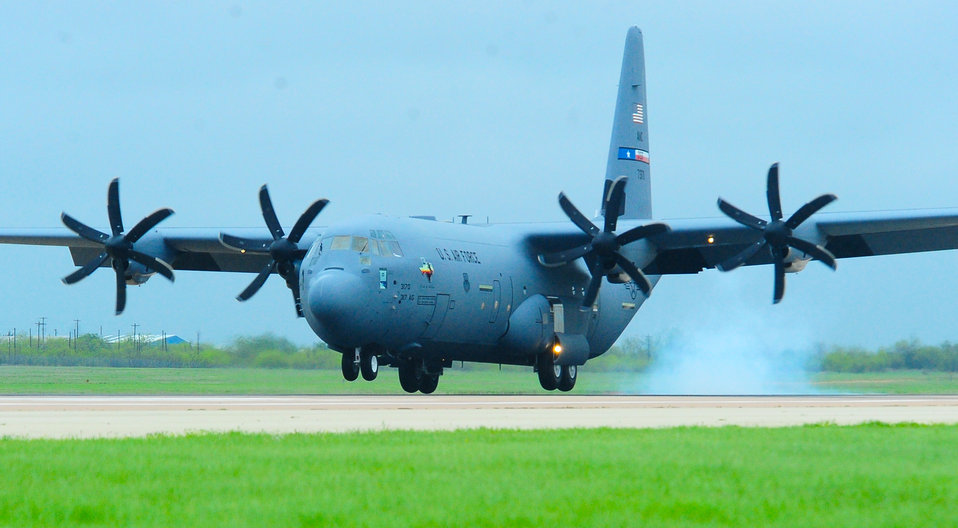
Super Herc

A C-130J Super Hercules touches down at Dyess Air Force Base, Texas, April 16, 2010. The new Super Herc is being delivered by Air Force Chief of Staff Gen. Norton Schwartz to the 317th Airlift Group there. The base's first C-130J, named